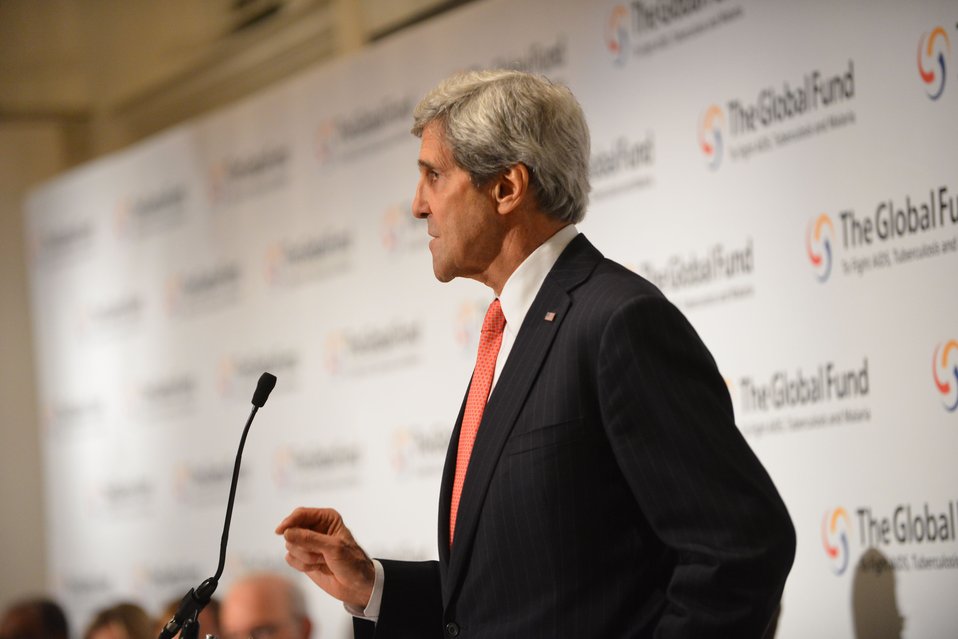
Secretary Kerry Delivers Remarks at the Partnership Symposium of the Global Fund’s Fourth Replenishment Conference

U.S. Secretary of State John Kerry delivers remarks at the Partnership Symposium of the Global Fund’s Fourth Replenishment Conference in Washington, D.C., on December 2, 2013.